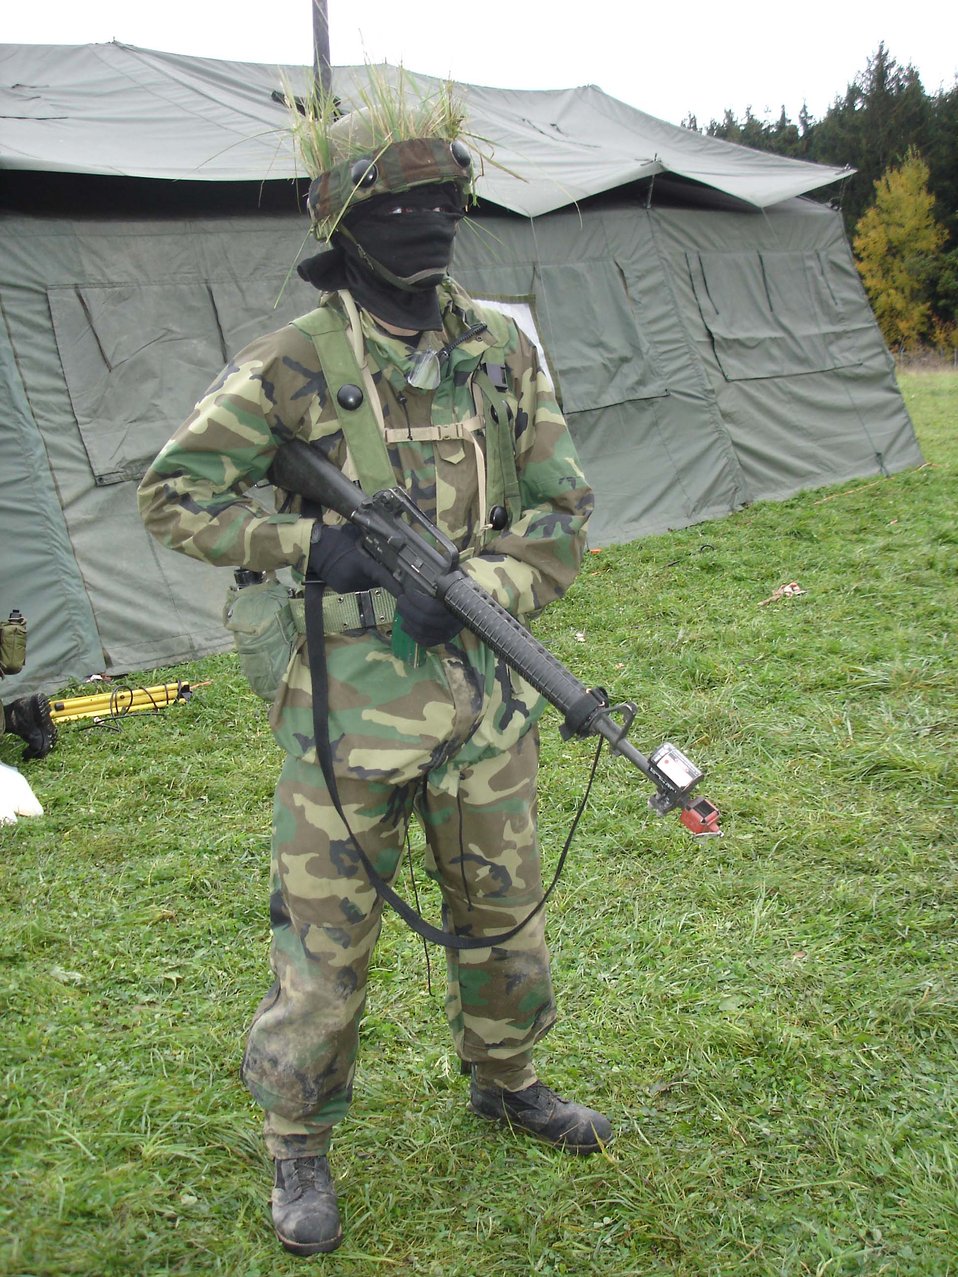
Combat Comm readies Airmen for deployments

Airman 1st Class Tad Kloss guards an armory during the combat readiness course on Bitburg Air Base, Germany, Oct. 23. Airman Kloss is assigned to the 1st Combat Communications Squadron.